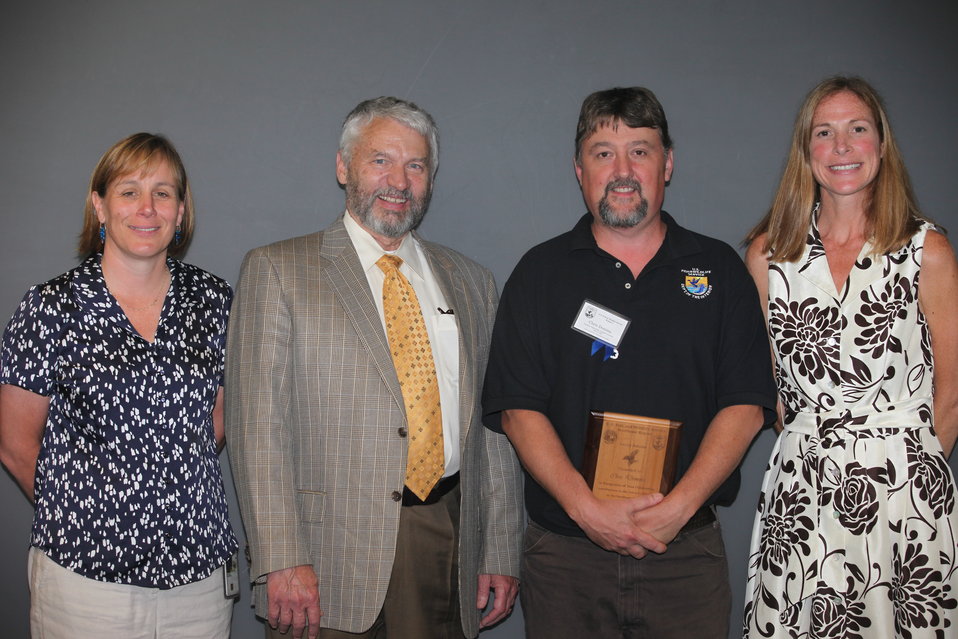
Chris Domina of the Craig Brook National Fish Hatchery recieved an Eagle Award.
From left to right: Deputy Regional Director Deb Rocque, Deputy Director Rowan Gould, Chris Domina, and Regional Director Wendi Weber